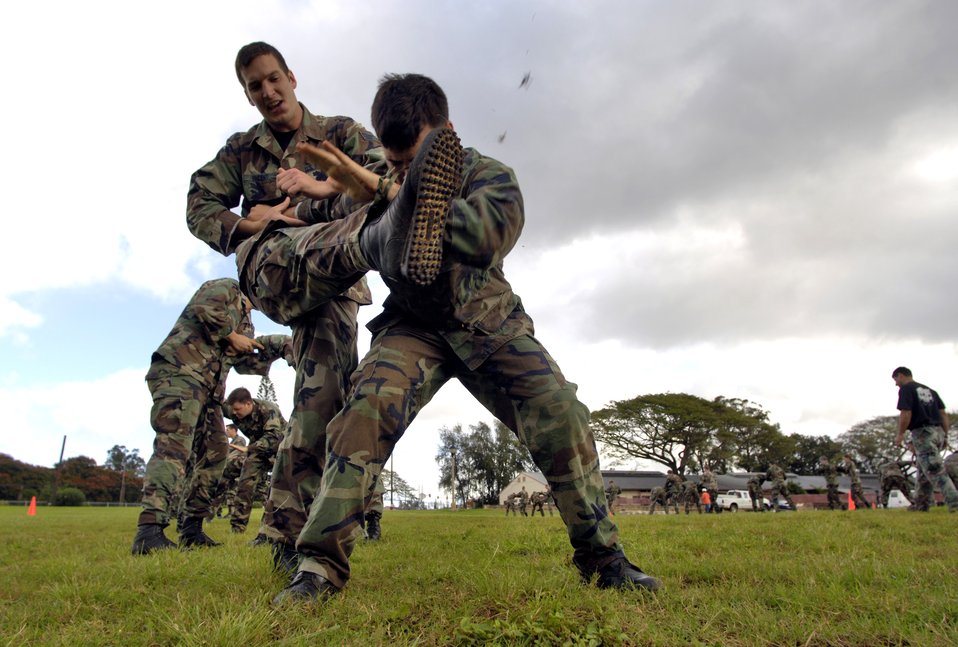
Close-combat skills

Staff Sgt. George Earhart protects his face from a kick from Senior Airman Justin Vincent during close-combat skills training Thursday, April 13, 2006, at Wheeler Army Air Field, Hawaii. Airman Vincent and Sergeant Earhart are tactical air controllers from the 25th Air Support Operation Squadron.